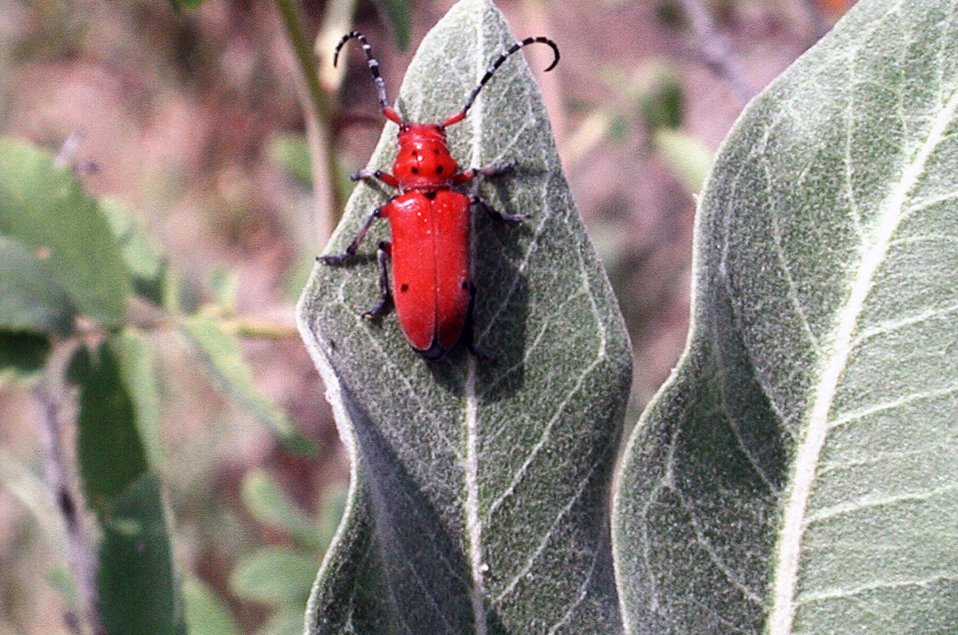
Red Beetle. Shane Presley, Spokane WildlifeHM